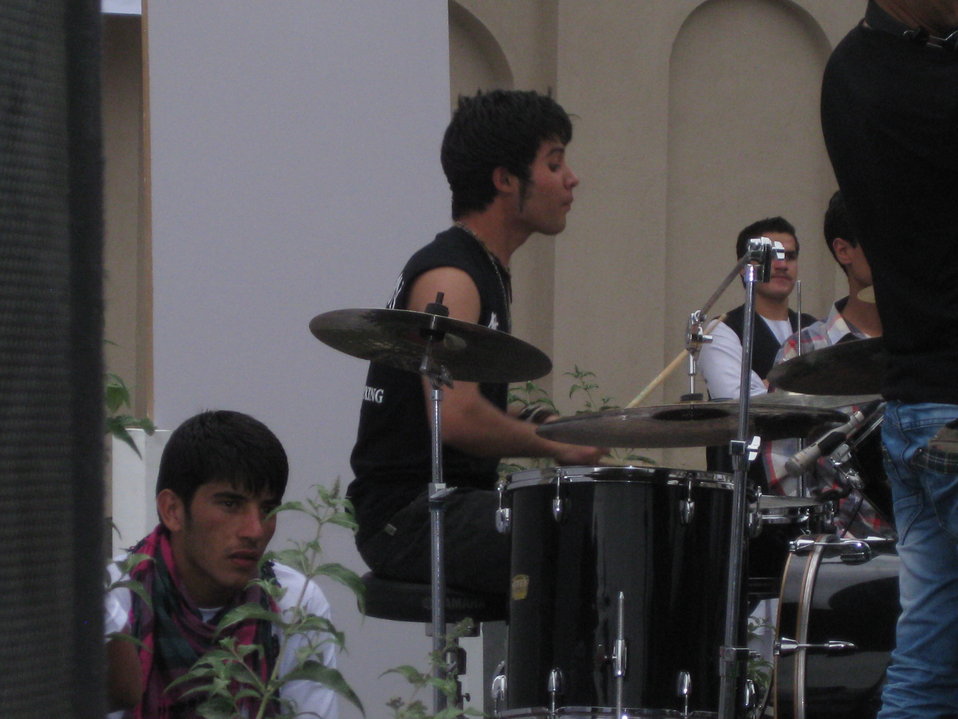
Afghan Youth Voices 107